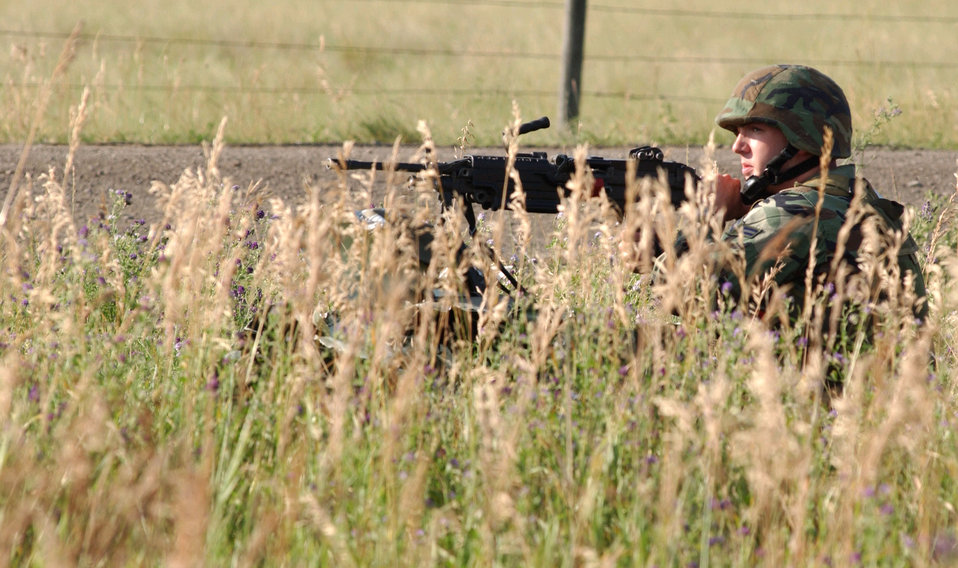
Deep cover

MALMSTROM AIR FORCE BASE, Mont. -- Airman 1st Class Adam Price mans an automatic weapon while securing a simulated accident site during a nuclear accident response exercise here July 29. Airman Price is a security forces Airman with the 741st Missile Security Forces Squadron.